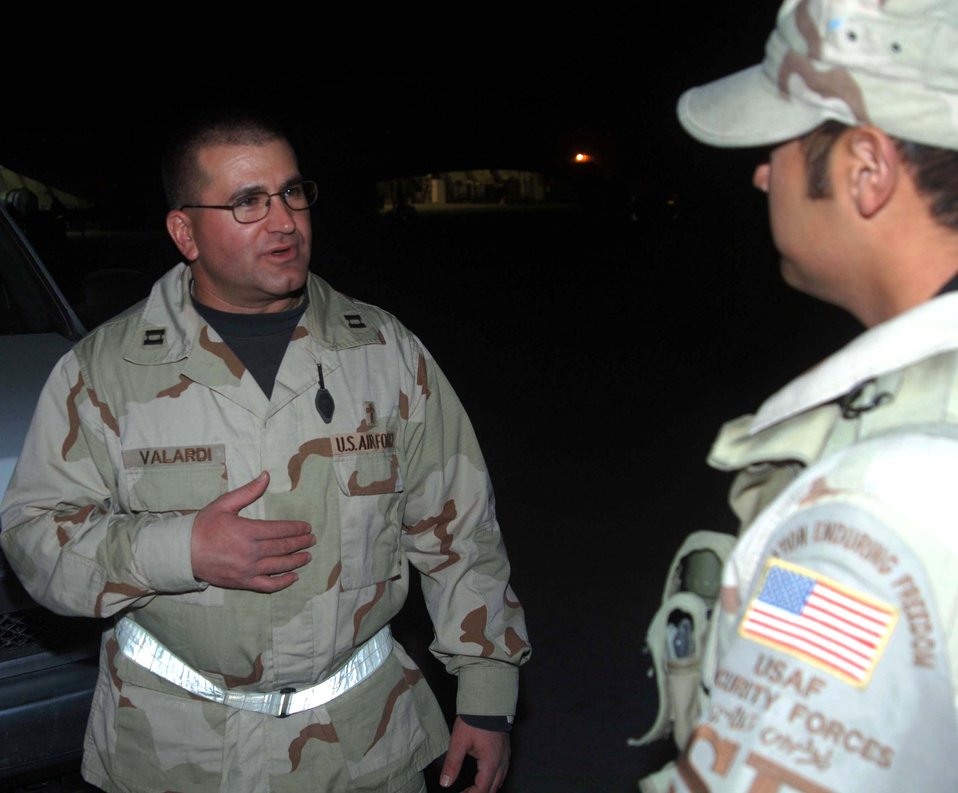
Bagram Airmen launch 'care strikes' to spread cheer

Capt. Ken Valardi, 455th Air Expeditionary Wing Command chaplain, visits with Airman 1st Class Carlos Rosario, 455th Expeditionary Security Forces Squadron, Nov. 26. Chaplain Valardi leads a group that regularly brings beverages and fellowship to wing Airmen working the night shift.